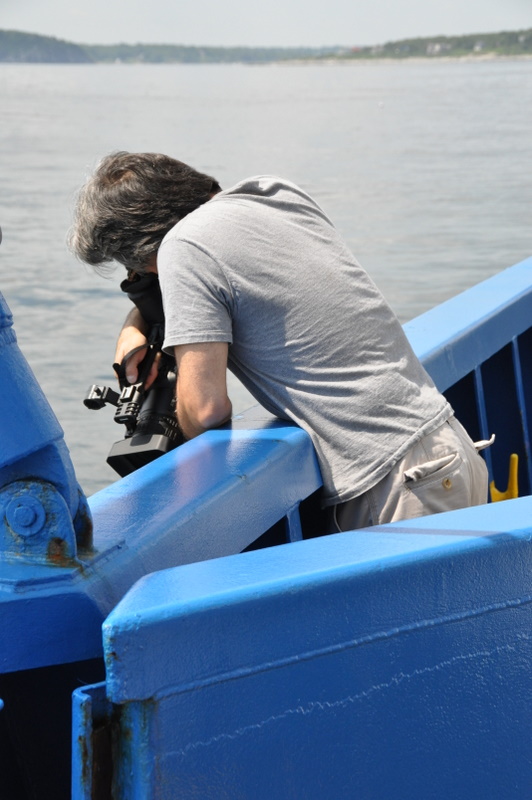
August 2009, Pushing the limits for the right shot

Check out the great videos compiled from this survey at www.epa.gov/ne/boldkids/videos.html Marco Rivera, contractor with the U.S. EPA gathers video footage for the Bold Kids website. Hope you enjoy!